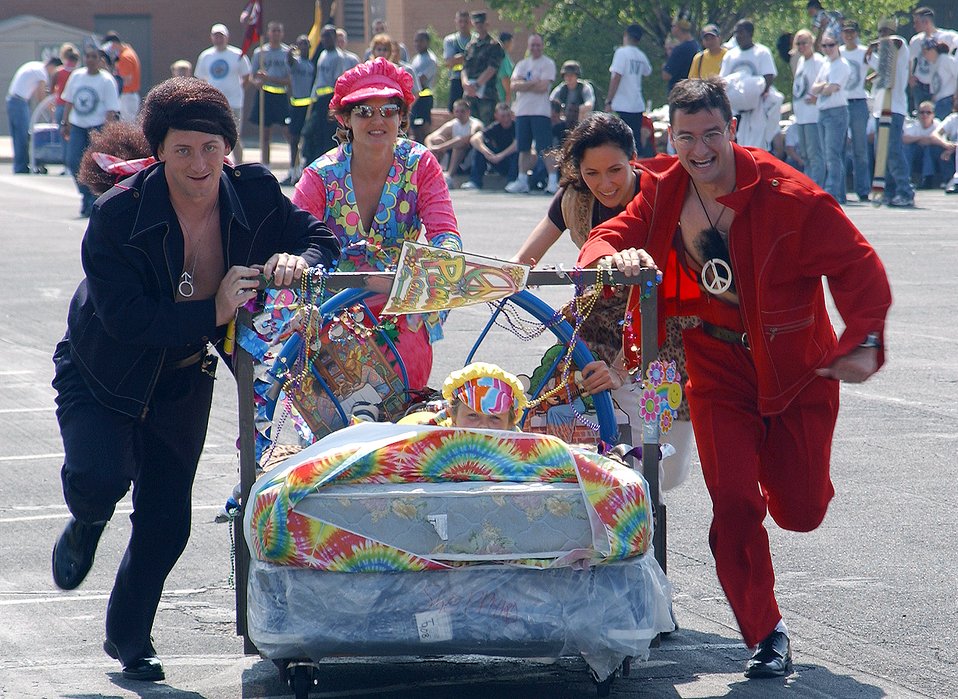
No sleeping matter

SHEPPARD AIR FORCE BASE, Texas -- (From left) Capt. Jason Largey, Master Sgt. Michelle Gardner, Camille Gardner, Capt. Carrie Loranger and 1st Lt. Derek Rowe race to the finish line during the base's annual Bed Race. The team won the overall event, along with an award for best costume. The race provides people here the opportunity to have fun while learning to work as a team. More than 10 teams participated in the event, and more than 250 people came to watch. The Airmen are assigned to the 82nd Training Wing.